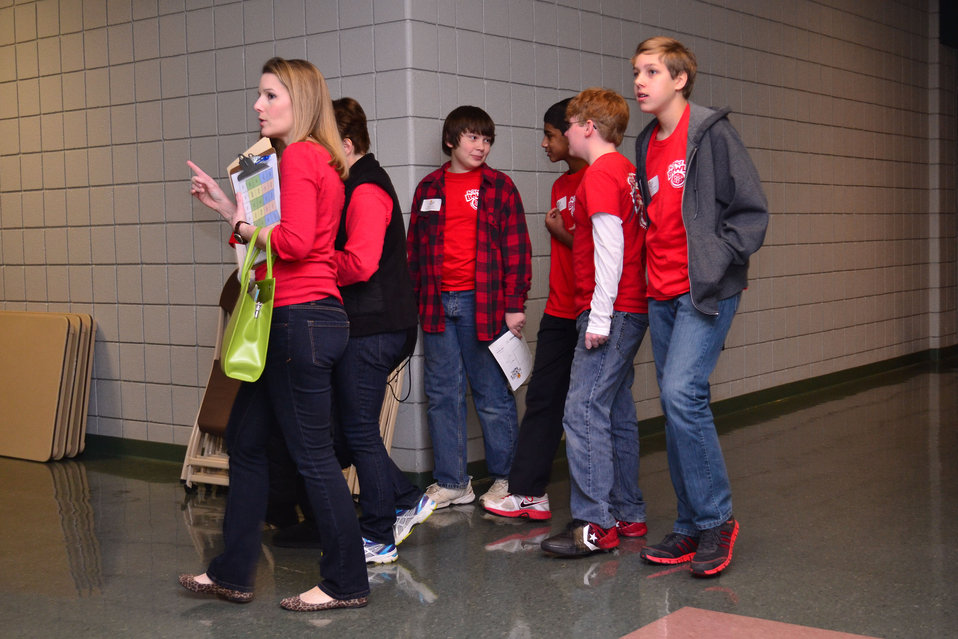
DOE Tennessee Middle School Science Bowl Oak Ridge

13-008 DOE photo Lynn Freeny DOE Tennessee Middle School Scence Bowl 2-2-2013 Oak Ridge Tennessee